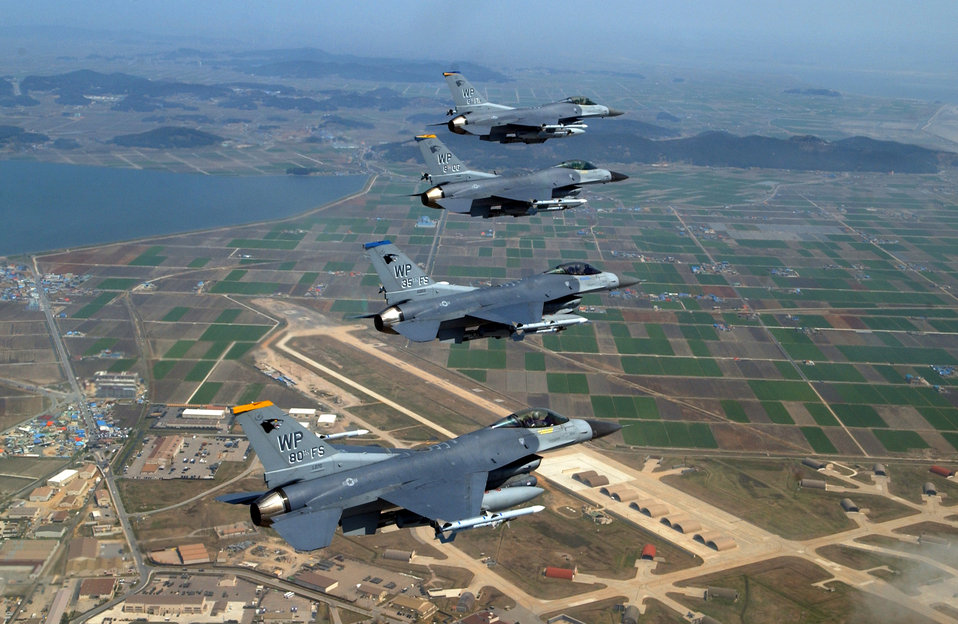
Falcons soar over South Korea

A formation of F-16 Fighting Falcons from the 8th Fighter Wing at Kunsan Air Base, South Korea, flies in close formation near the base on Friday, April 28, 2006. The formation was led by Col. Brian Bishop, 8th FW commander.